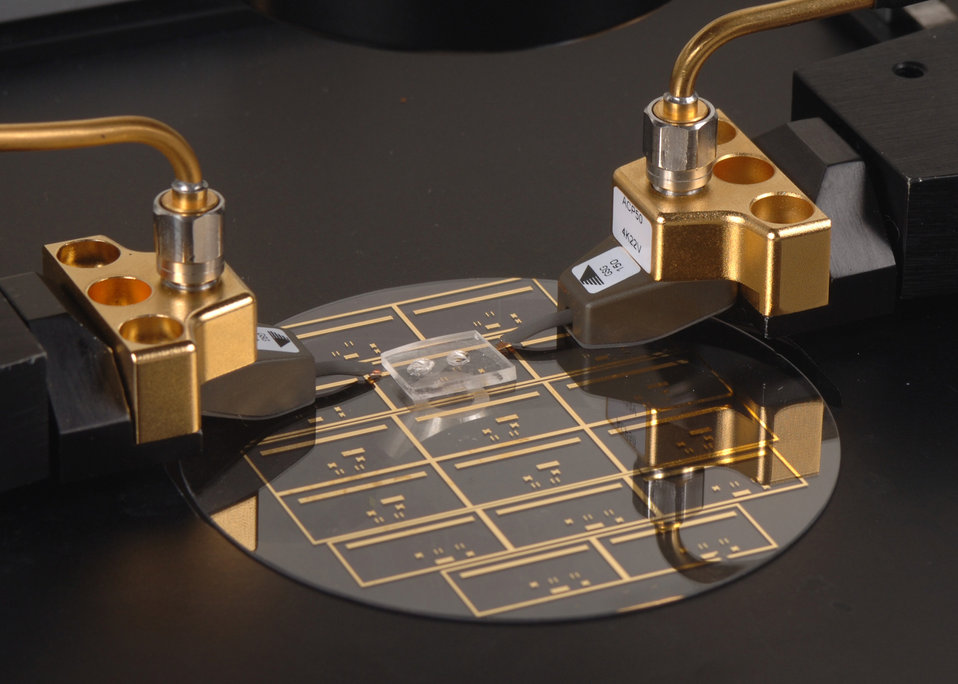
Lab-on-a-chip; Micro Microwave

Photograph of the NIST micro microwave oven. The gold traces on the glass disk are microwave transmission lines. The 1.25 centimeter wide polymer block over one of the transmission lines houses a miniature chamber in which a pinhead-sized drop of fluid can be heated. The large devices on either side of the polymer block are microwave probes.